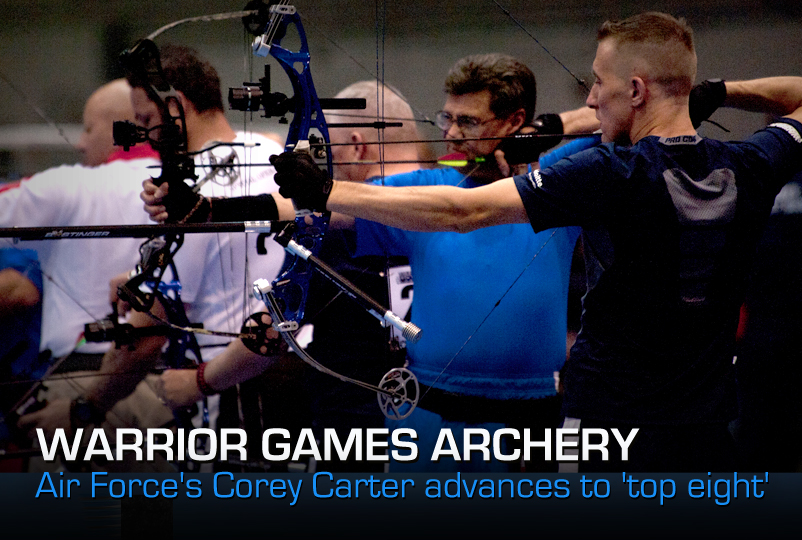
Warrior Games Archery